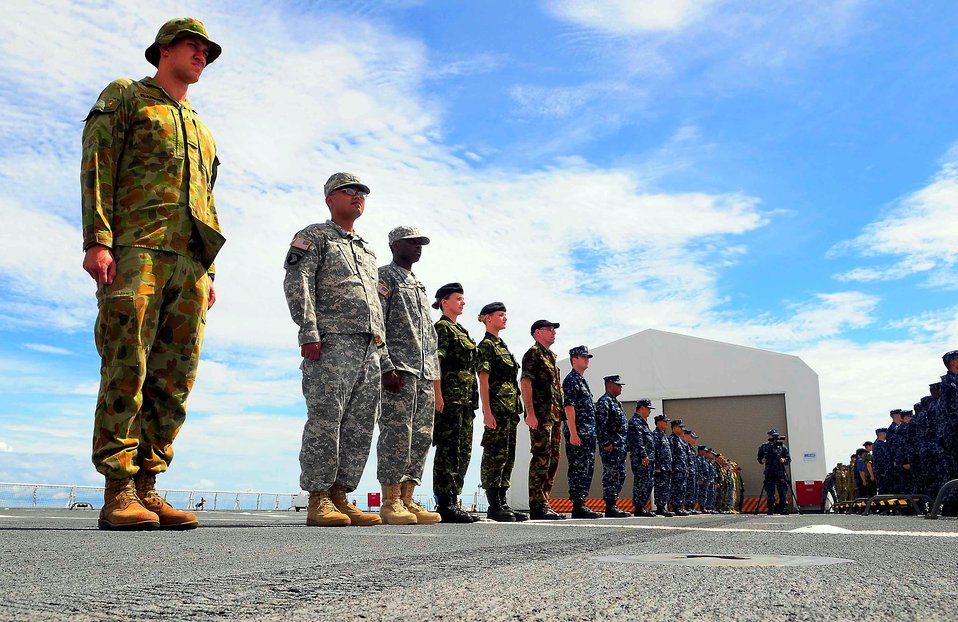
U.S. and Partner Nation Service Members Man the Rails

U.S. and partner nation service members assigned to the Military Sealift Command hospital ship USNS Mercy (T-AH 19) man the rails during a Pass and Review demonstration with the Japan Maritime Self Defense Force ship JDS Kunisaki (LST 4003), marking the completion of their collaborative efforts with Pacific Partnership 2010, on July 5, 2010. Mercy is conducting the fifth in a series of annual U.S. Pacific Fleet humanitarian and civic assistance endeavors to strengthen regional partnerships.